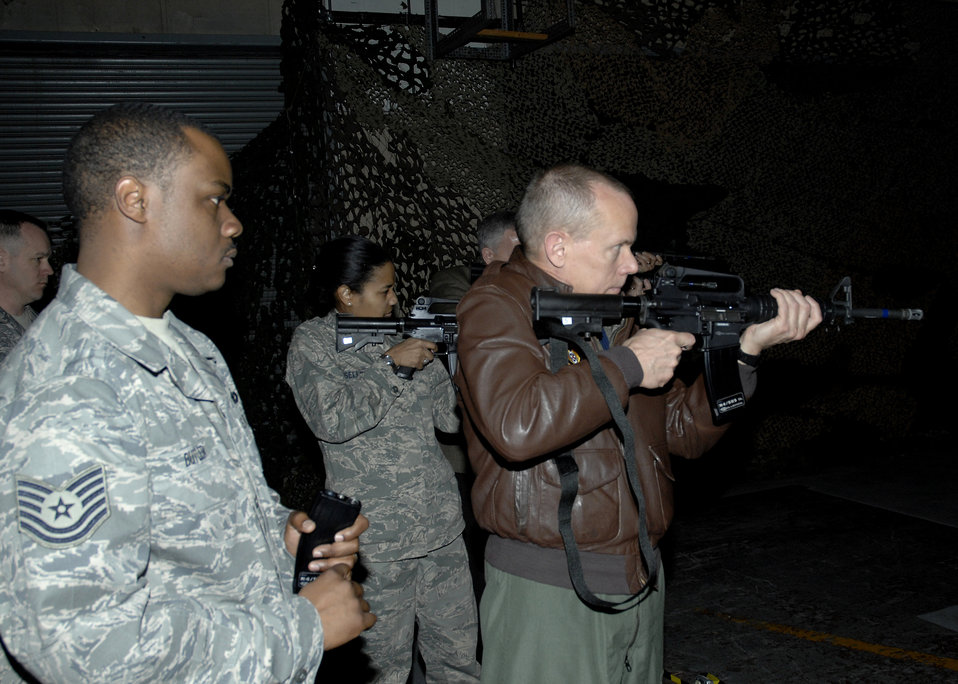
Virtual weapons provide real training for security forces

General Donald J. Hoffman, takes aim with an M-4 carbine during a scenario on the Firearms Training Simulator in Janurary at Wright-Patterson Air Force Base, Ohio. Looking on is the training director, Tech. Sgt. Bryant Butler of the 88th Security Forces Squadron. General Hoffman is the commander of Air Force Materiel Command.